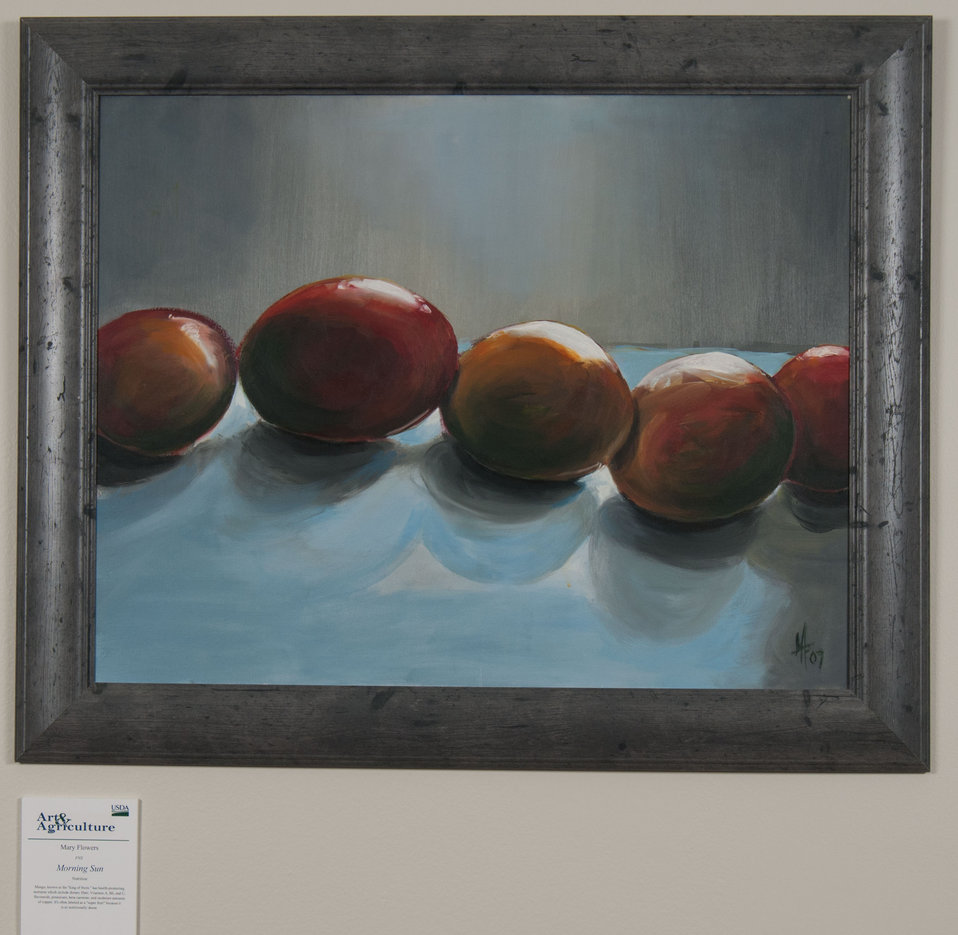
Online Viewer's Choice entries of the 2013 Art & Agriculture, Tuesday, July 9, 2013, in the South Building, Washington, D.C. Themes were expressed by employees from across the department and the contest was open to full-time and part-time USDA employees. Winning artwork will be displayed till the end of the year. U.S. Artistic expression is a creative outlet that is vital for an individual to grow and develop.